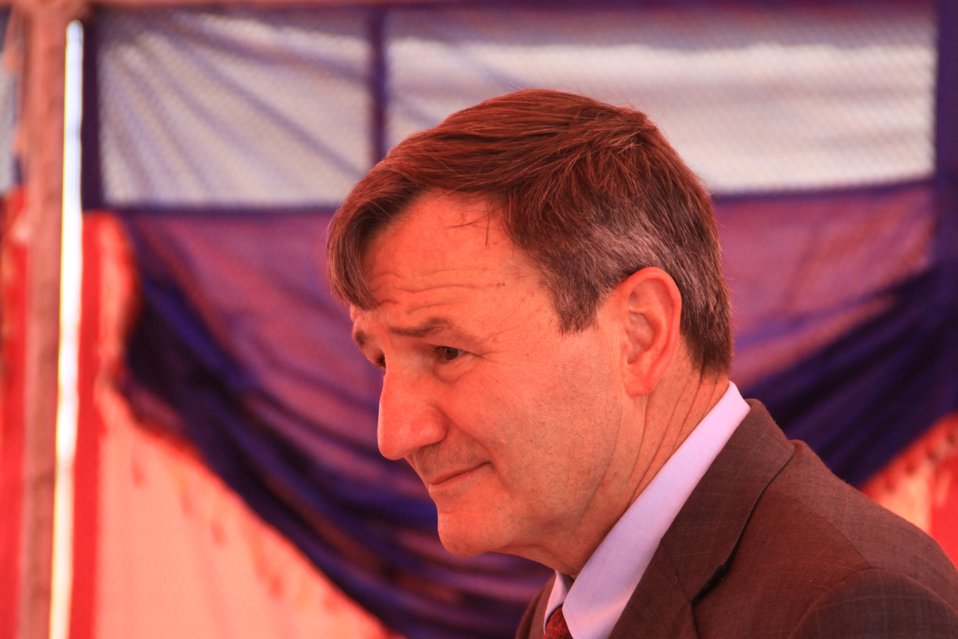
Badam Bagh Farm